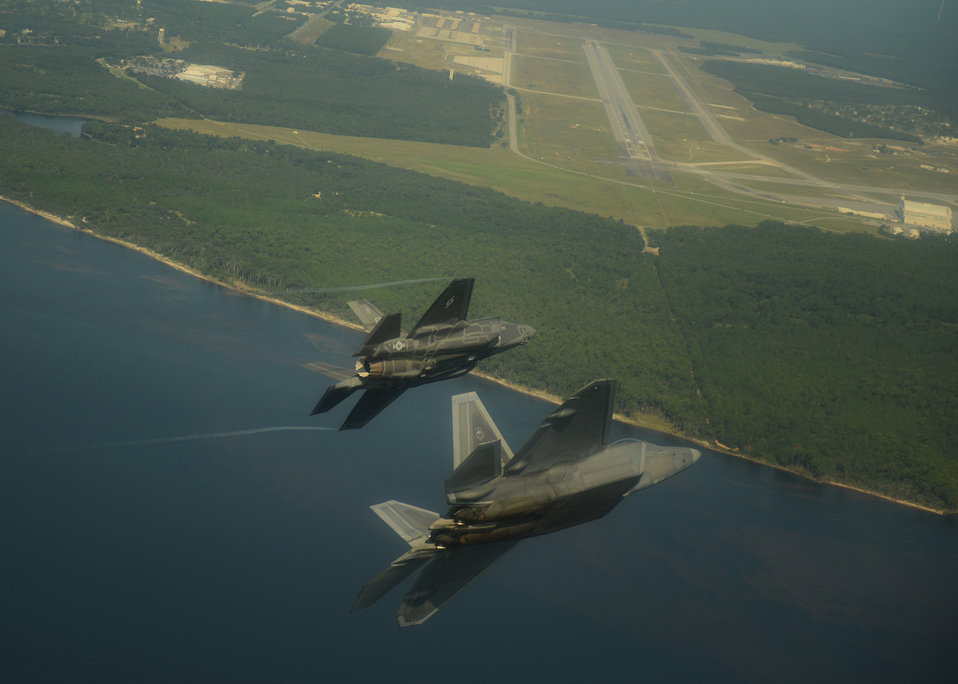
Fifth-generation formation

An F-22A Raptor, foreground, from the 43rd Fighter Squadron at Tyndall Air Force Base, Fla., and an F-35A Lightning II joint strike fighter from the 33rd Fighter Wing at Eglin Air Force Base, Fla., soar over the Emerald Coast Sept. 19, 2012. This was the first time the two fifth-generation fighters have flown together for the Air Force.